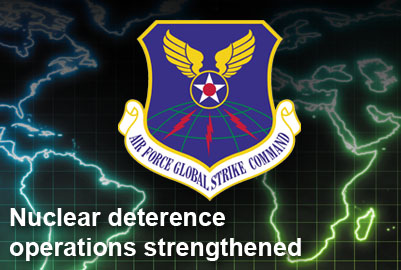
Nuclear deterrence operations strengthened

There are new initiatives underway within the Air Force that are emphasizing nuclear security, thus strengthening the nuclear deterrence operations of the service.